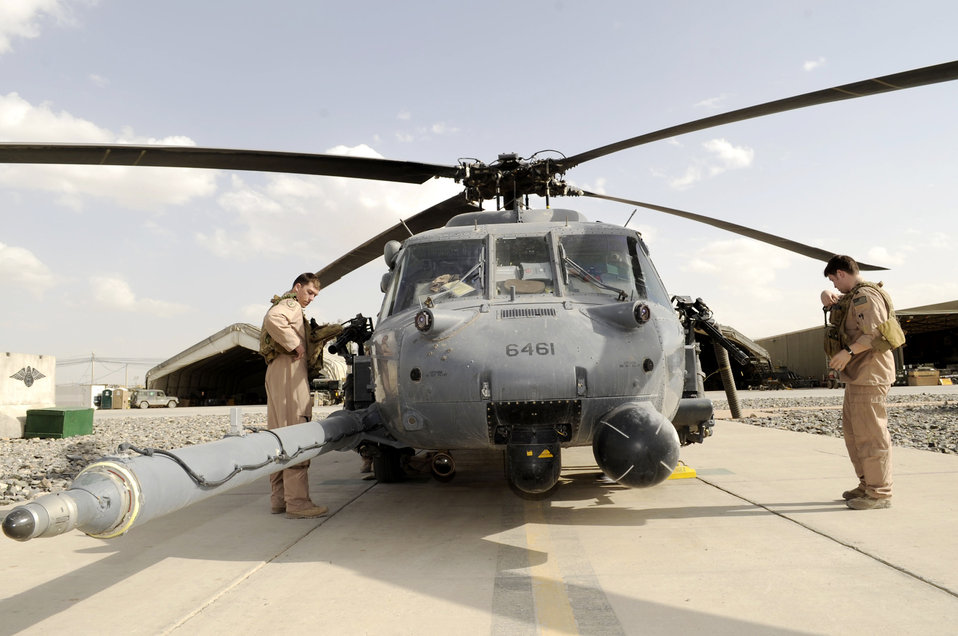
Rescue crews fly into hostile zones to save lives

Capt. Josh Irvine and Capt. Rob Roth conduct a routine preflight check on a HH-60G Pave Hawk helicopter March 5, 2010, at Kandahar Airfield, Afghanistan. Captain Irvine is the crew's aircraft commander and Captain Roth is the mission pilot. Both are assigned to the 66th Expeditionary Rescue Squadron from Nellis Air Force Base, Nev.